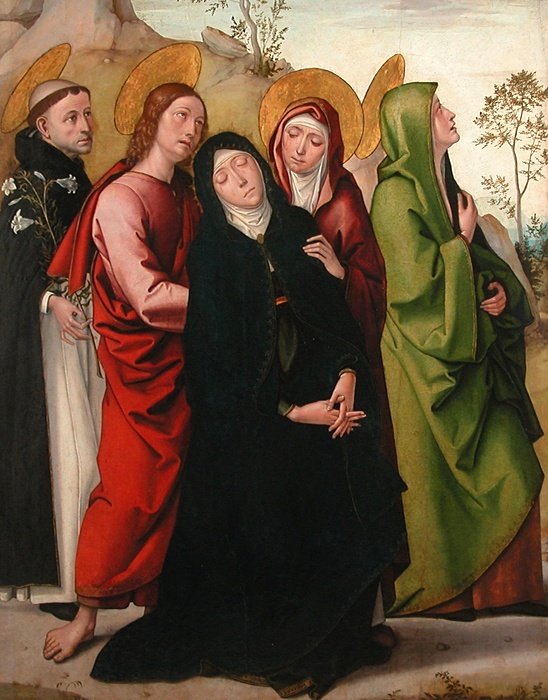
'The Virgin, Saint Dominic de Guzman, Saint John the Evangelist', painting by Juan de Borgoña, c. 1515, the Louvre